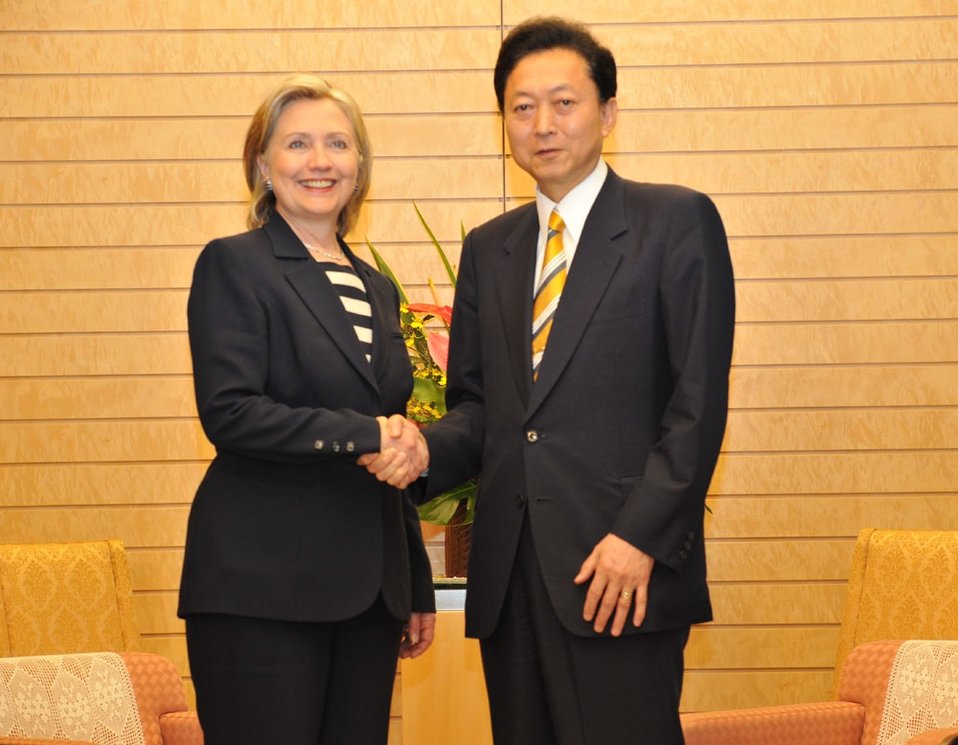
Secretary Clinton Meets Prime Minister Hatoyama

U.S. Secretary of State Hillary Rodham Clinton meets Japanese Prime Minister Yukio Hatoyama at the prime minister's office in Tokyo, Japan, May 21, 2010.